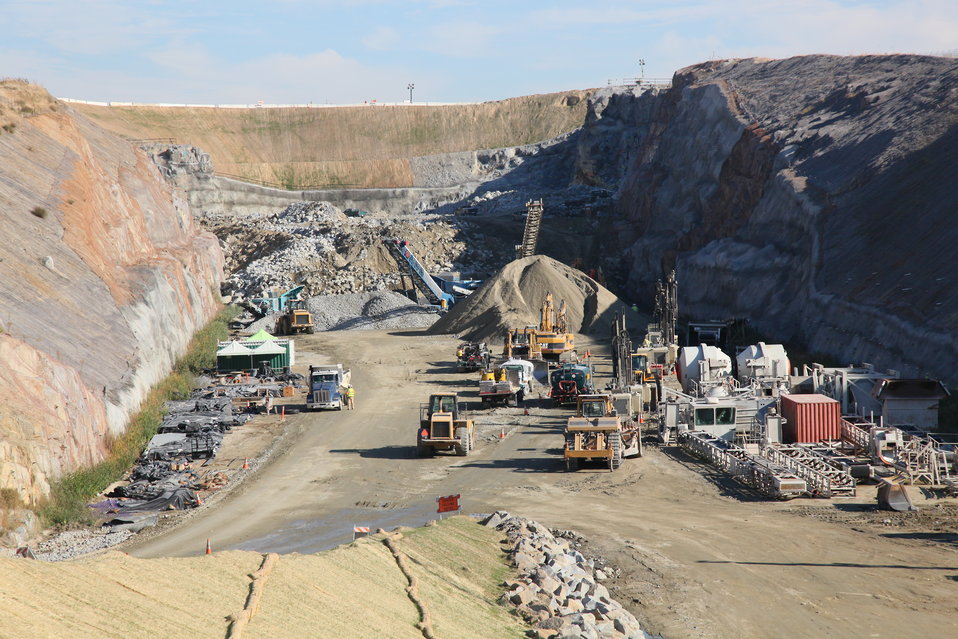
Continued progress at the Folsom auxiliary spillway

Excavation of the auxiliary spillway at Folsom Dam in Folsom, Calif., continues Nov. 10, 2011. The spillway will let Folsom Dam release water sooner and more safely. The project is part of the Folsom Dam Joint Federal Project, a joint effort of the U.S. Army Corps of Engineers Sacramento District, the U.S. Bureau of Reclamation, the Central Valley Flood Protection Board and the Sacramento Area Flood Control Agency to improve the safety of the dam and reduce flood risk for the greater Sacramento area.